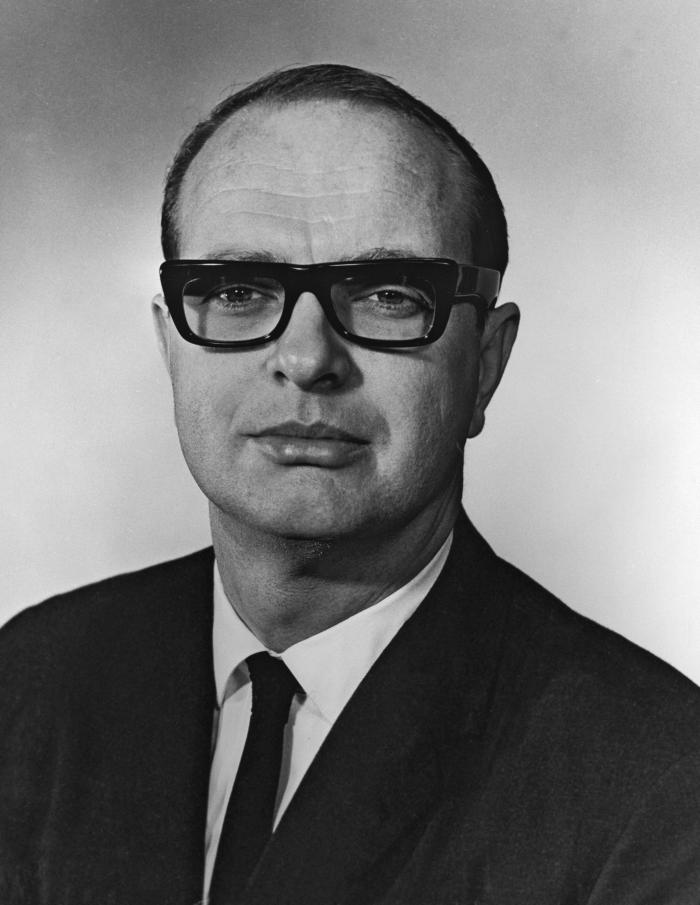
McWilson Warren (1929 - ), Ph.D., is a career US Public Health Service officer whose special areas of research include the study of primate malaria, and field epidemiology.